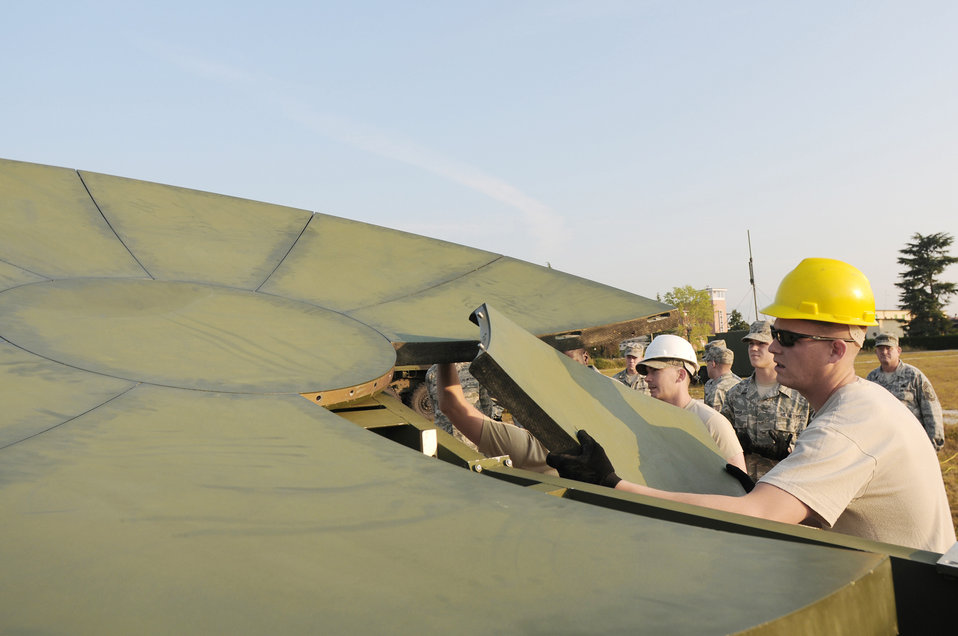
Comm Training

Staff Sgt. Nathon Wheat, a radio maintainer with the 1st Combat Communications Squadron at Ramstein Air Base, Germany, inserts the final panel into the center hub of a satellite dish Sept. 22, 2009, during a training exercise at Aviano AB, Italy. Sergeant Wheat and other radio and satellite communications Airmen on his team conducted cross-flow training in preparation for the upcoming merger into the new transmission systems career field in October 2009.